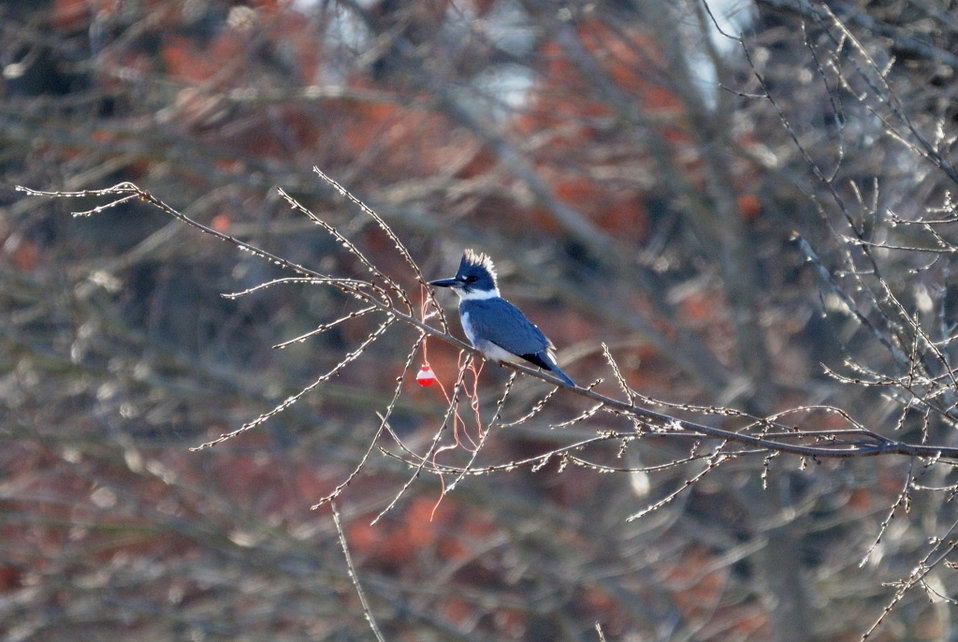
Photo of the Week - Belted Kingfisher (MA)

Photo of the Week - 12/16/2013

What is the longest running citizen science survey in the world? It's the Christmas Bird Count! The 114-year-old event runs from December 14 through January 5. Check out more at bit.ly/1gq2Kkg